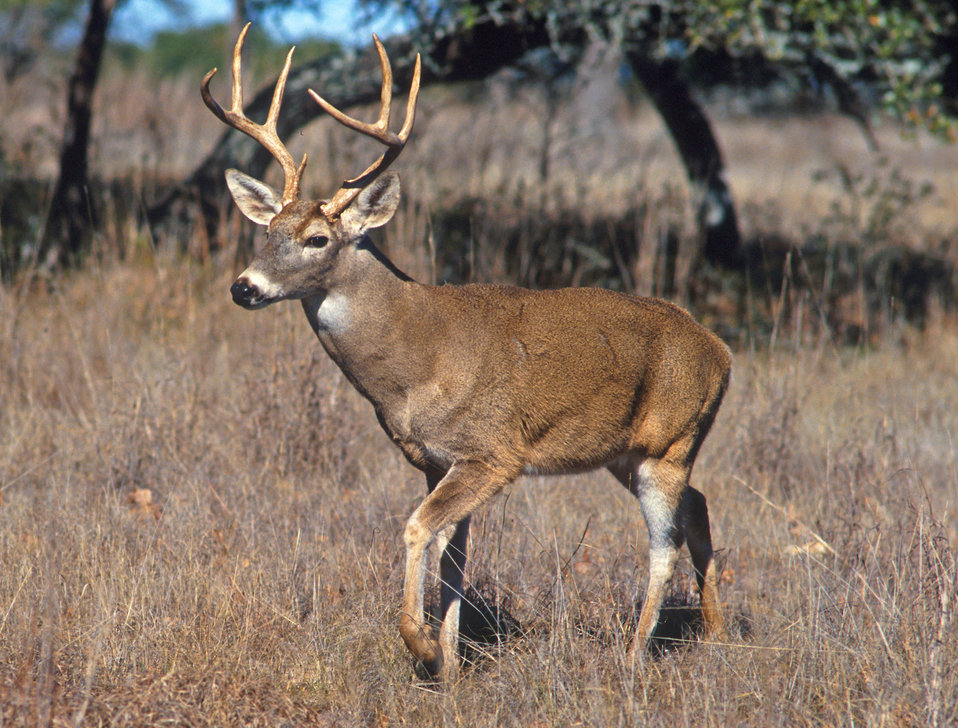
The white-tailed deer is the primary host for adult blacklegged ticks in the Northeast.